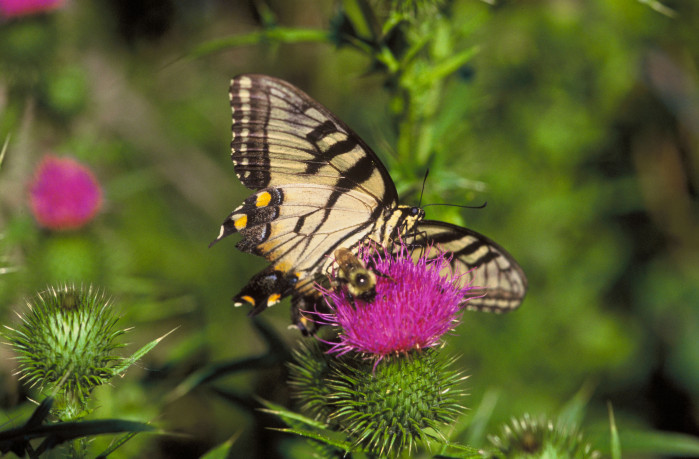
swallowtail butterfly and bee on thistle

John Heinz National Wildlife Refuge, PA